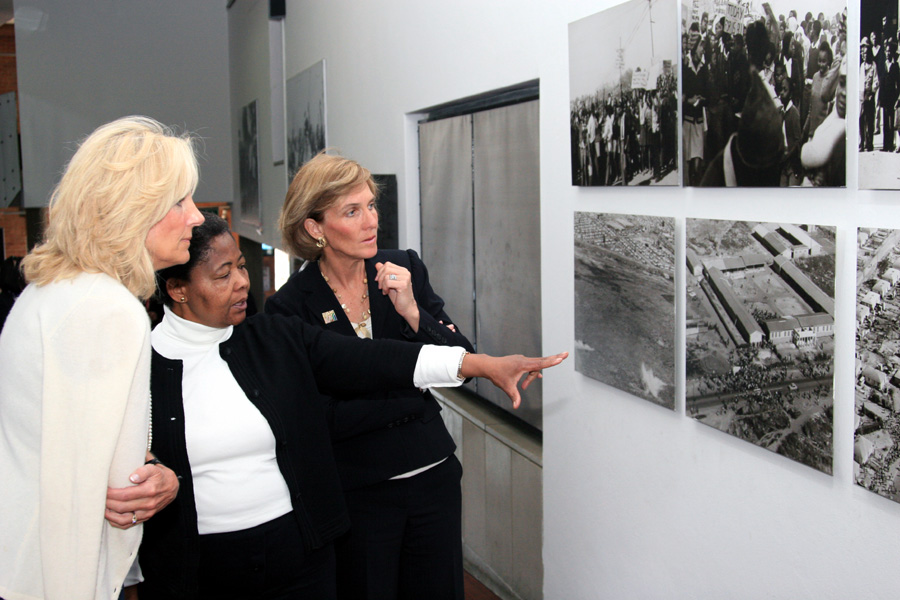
Dr. Jill Biden and Liz Berry Gips Visit Hector Pieterson Museum

Dr. Jill Biden, wife of Vice President Joseph Biden, and Liz Berry Gips, wife of U.S. Ambassador to South Africa Donald H. Gips, visit the Hector Pieterson Museum in Soweto, South Africa, on June 12, 2010.